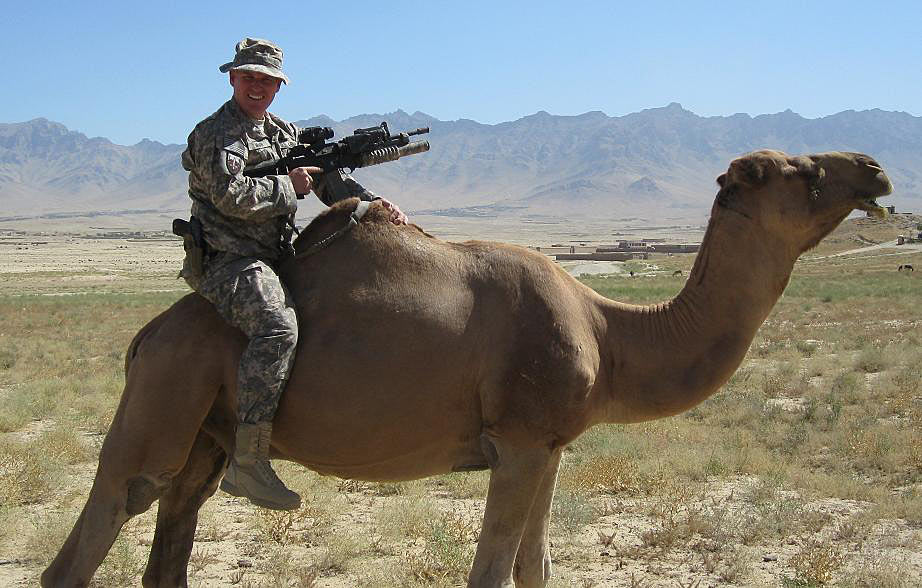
Sean Mann-Pacific Southwest Region

Sean Mann, a Senior Special Agent stationed in Sacramento, California, served with several branches of the military. He was Active Duty Army 1992-1996, Montana Army National Guard 1996- 2000, Texas Army National Guard 2000- 2002 and Army Reserves 2003 to present. He was deployed to Afghanistan in January 2009 thru March 2010 as a Combat Advisor to the Afghanistan National Army (ANA), and spent one year with an Afghan unit and a local Afghan interpreter. He says that after this picture was taken, he soon learned how fast camels can run. With the Fish and Wildlife Service, he has been a biologist, wildlife inspector and special agent. He is also the Lead Regional Firearms Instructor for Region 8, a firearms armor for Region 8, and he is on the Surge Disaster Team.